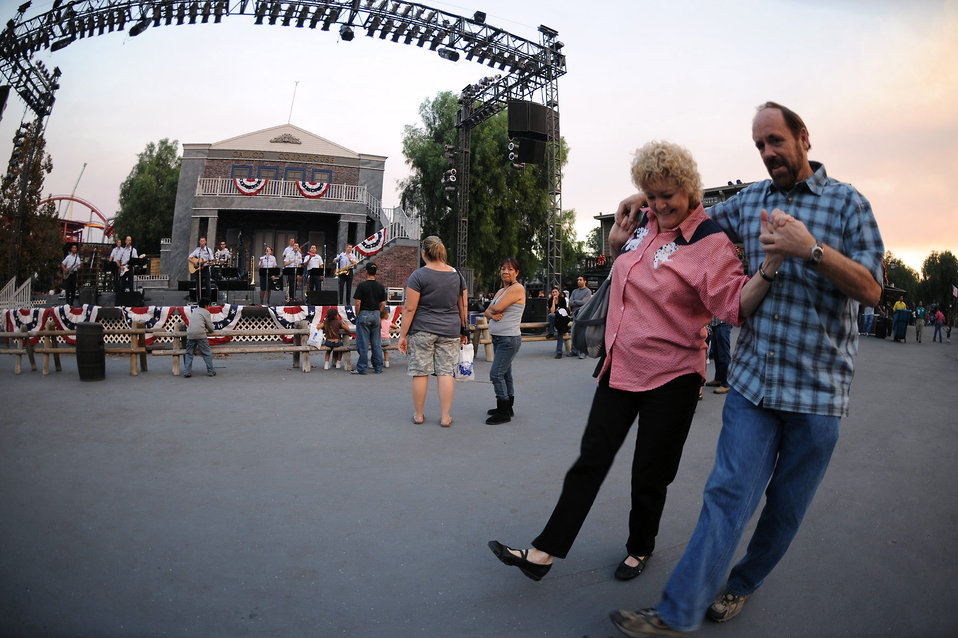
Bands spread Air Force message through music

Cheri Greer and John Foote two-step as members of the Air National Guard Band of The Southwest perform at Knott's Berry Farm Nov. 15 in Los Angeles. The band is performing during Air Force Week Los Angeles, which is an event designed to educate the local population about the Air Force's capabilities and missions through various activities and exhibitions all over the Los Angeles area.